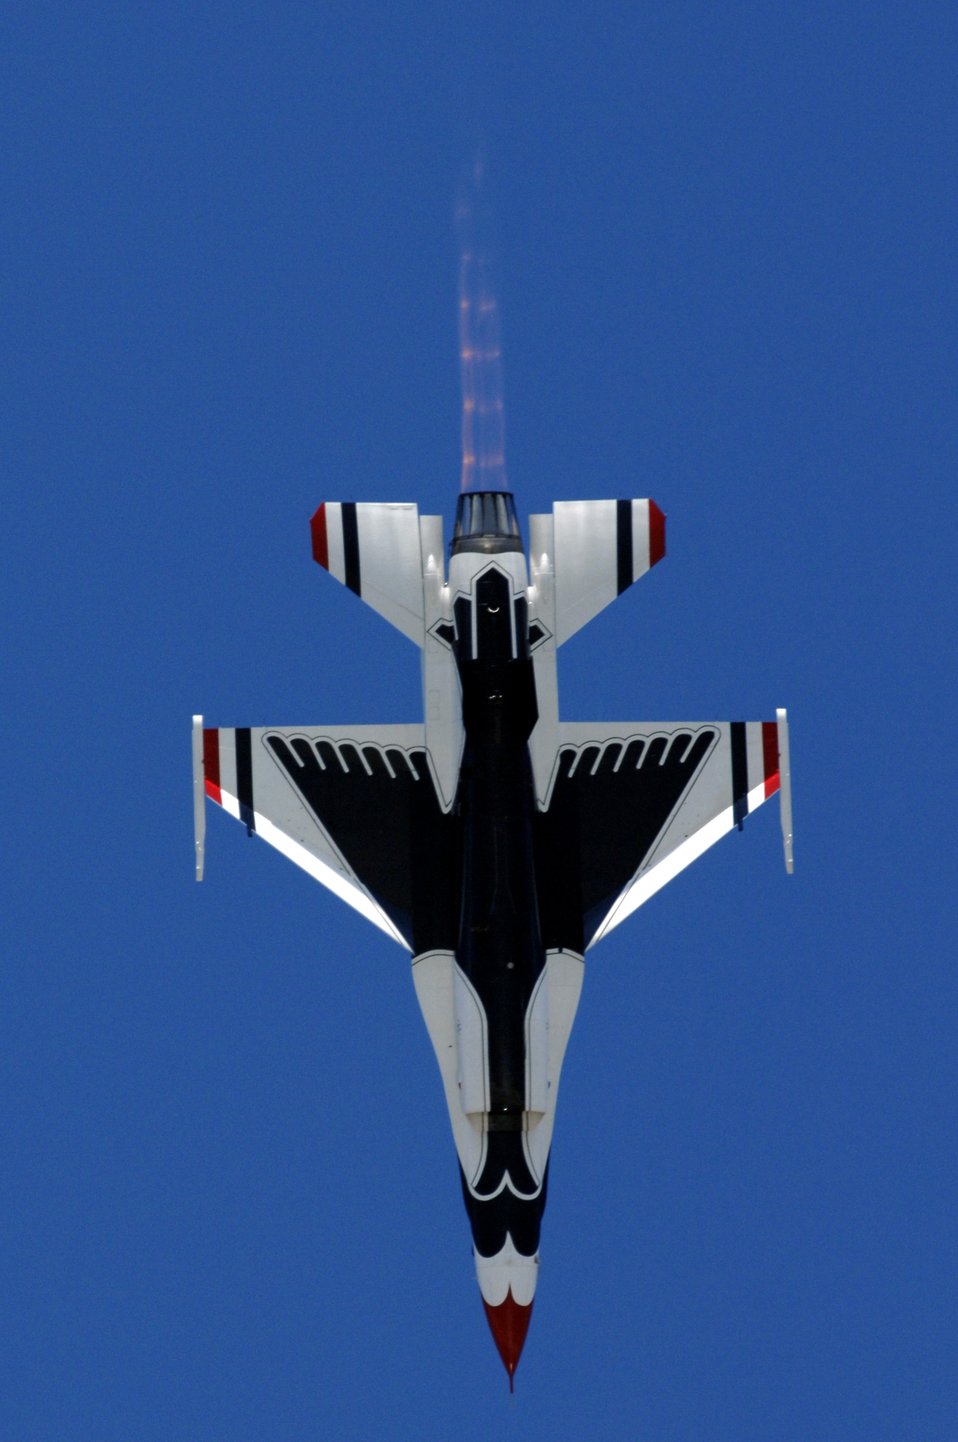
Raptor, Thunderbirds fly over California

Maj. Samantha Weeks dives her F-16 Falcon straight down to show center while performing the Split S maneuver upon takeoff during the U.S. Air Force Air Demonstration Squadron, the Thunderbirds, practice show March 30 at Naval Base Ventura County in Point Mugu, Calif. Major Weeks is the opposing solo pilot on the Thunderbirds team. The Thunderbirds air demonstration is a mix of formation flying and solo routines.